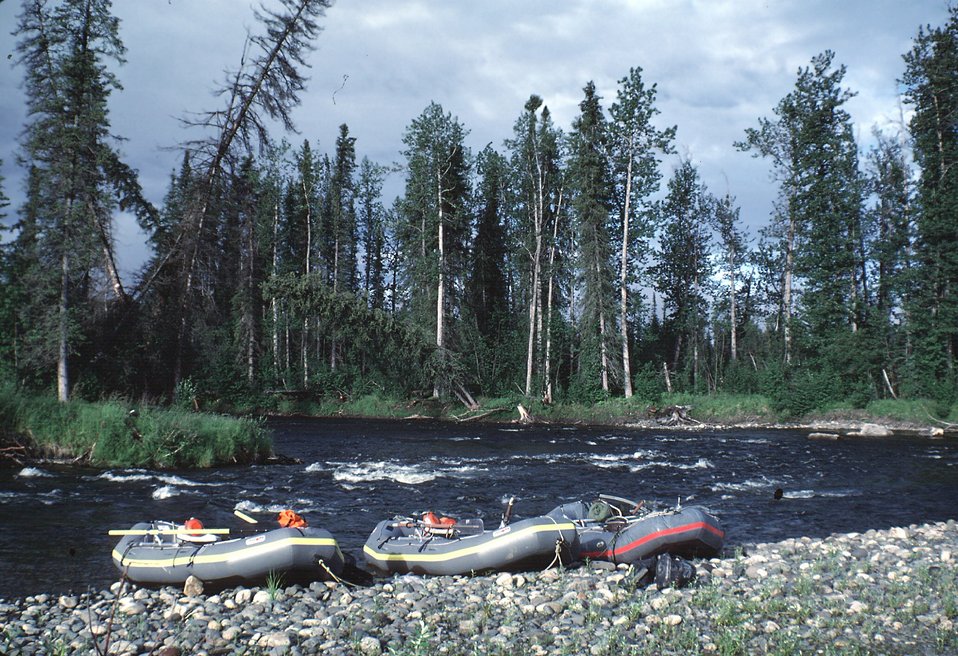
Rafts on shore, Gulkana NWSR